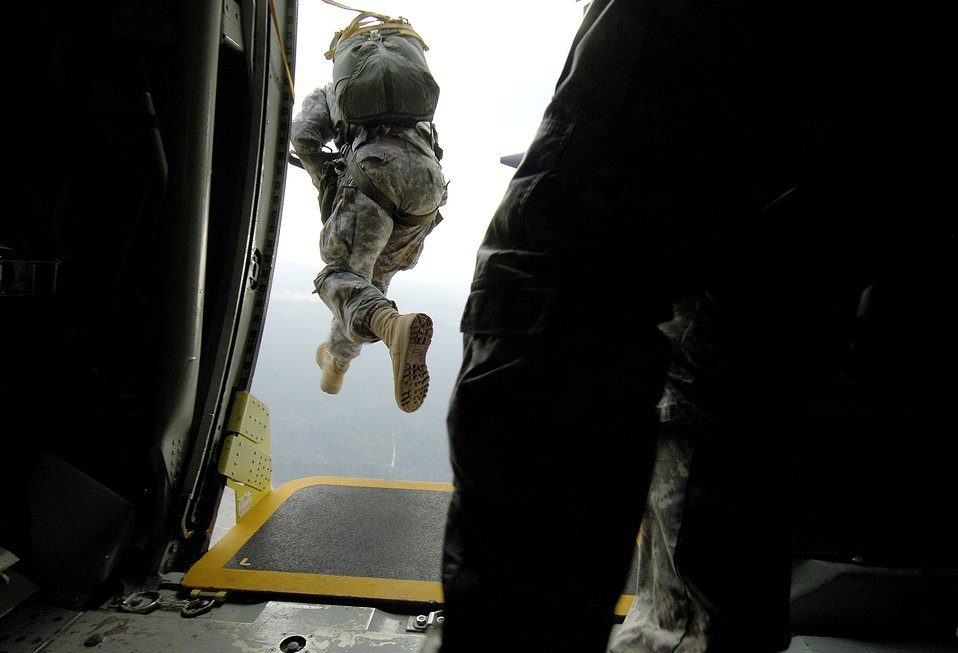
Look out below

A U.S. Army paratrooper from Fort Bragg, N.C., jumps from a C-130 Hercules during Operation Toy Drop. Paratroopers participate in the annual operation by donating a toy in exchange for a chance to make a non-tactical parachute jump from a 43rd Airlift Wing C-130 from Pope Air Force Base, N.C.